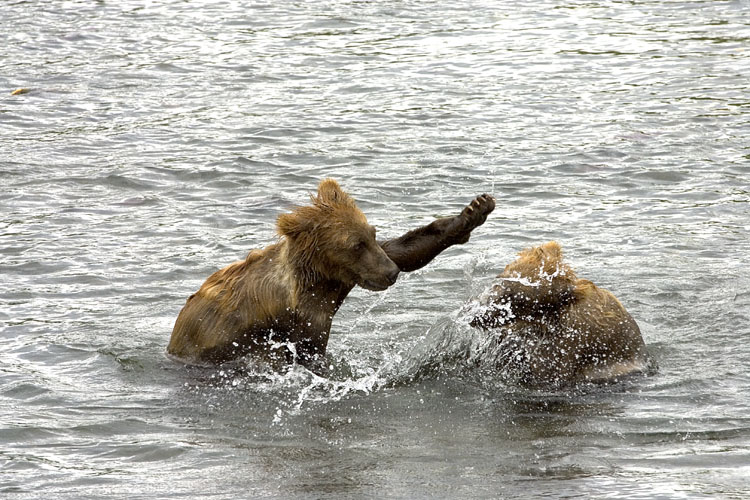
Kodiak Brown Bears

Playful Kodiak Bears